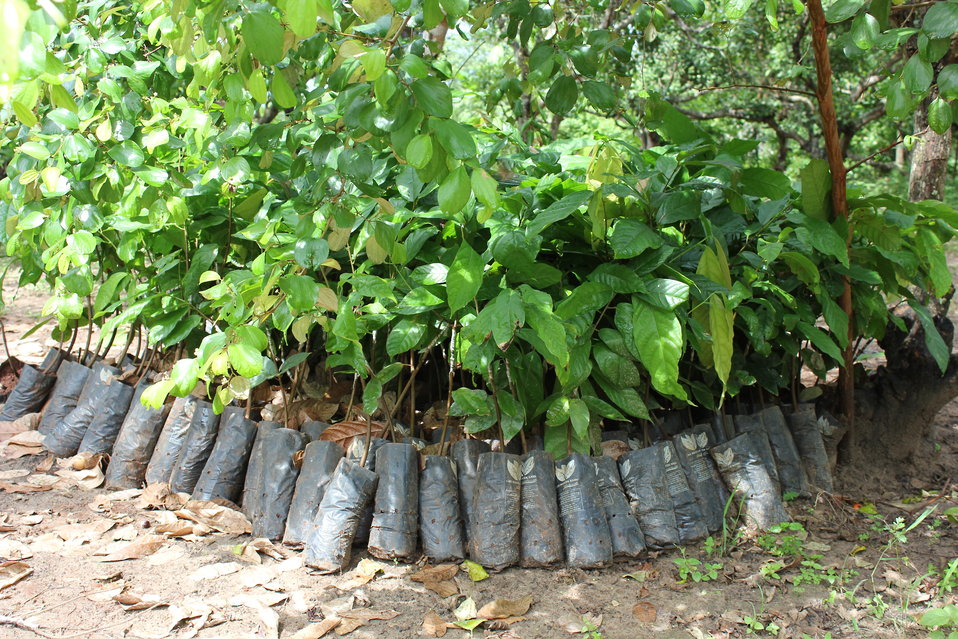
USAID supports cocoa cultivation in central Vietnam

Buon Don District, Dak Lak Province. August 6, 2013.